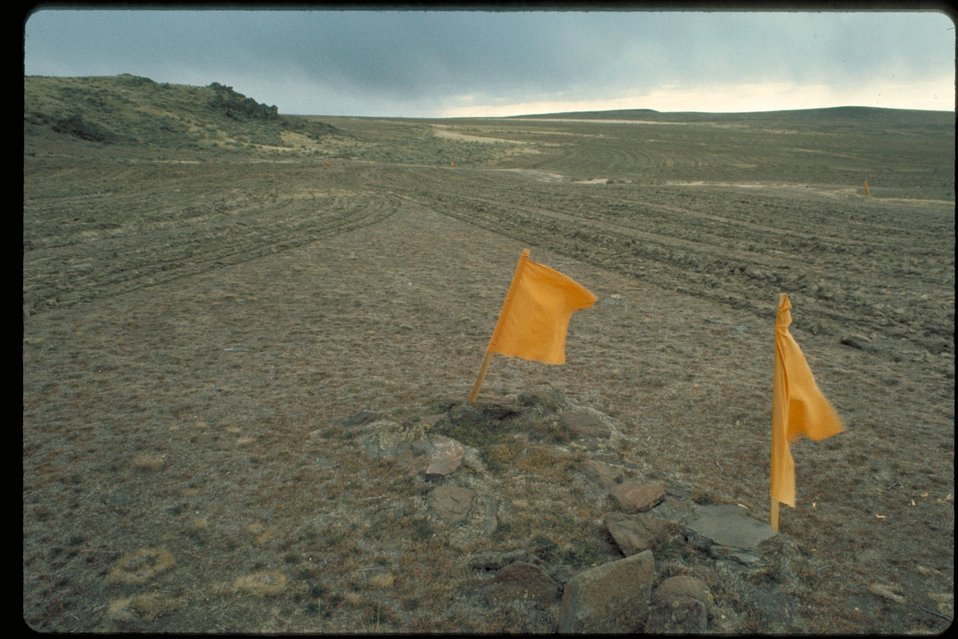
Grave on Kelton Road Canyon Creek Fire Rehab Near Mountain Home Oregon Trail Lower Snake River District